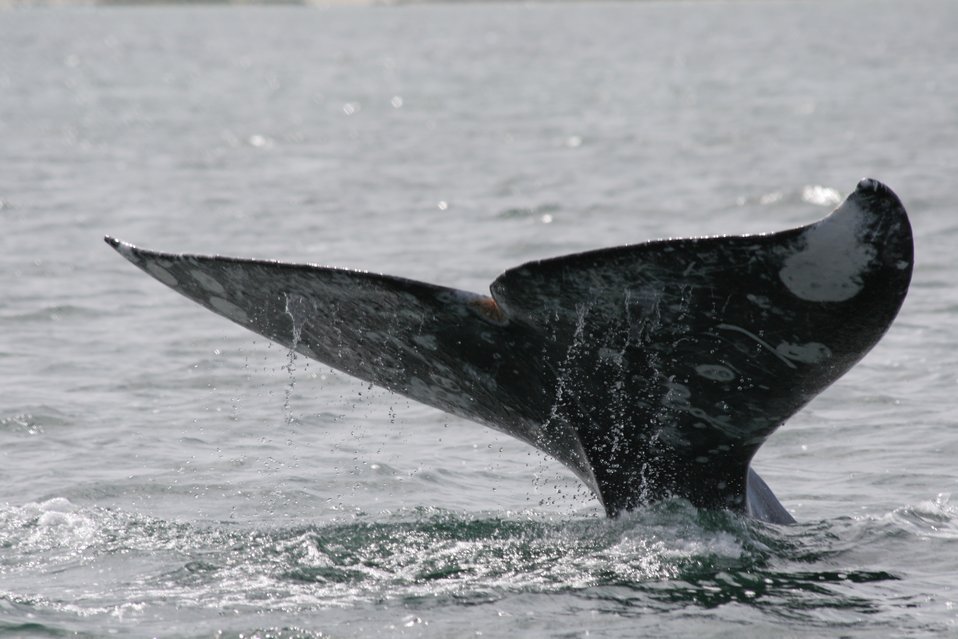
Flukes of gray whale. Note unique markings that help in identification of individual whales.